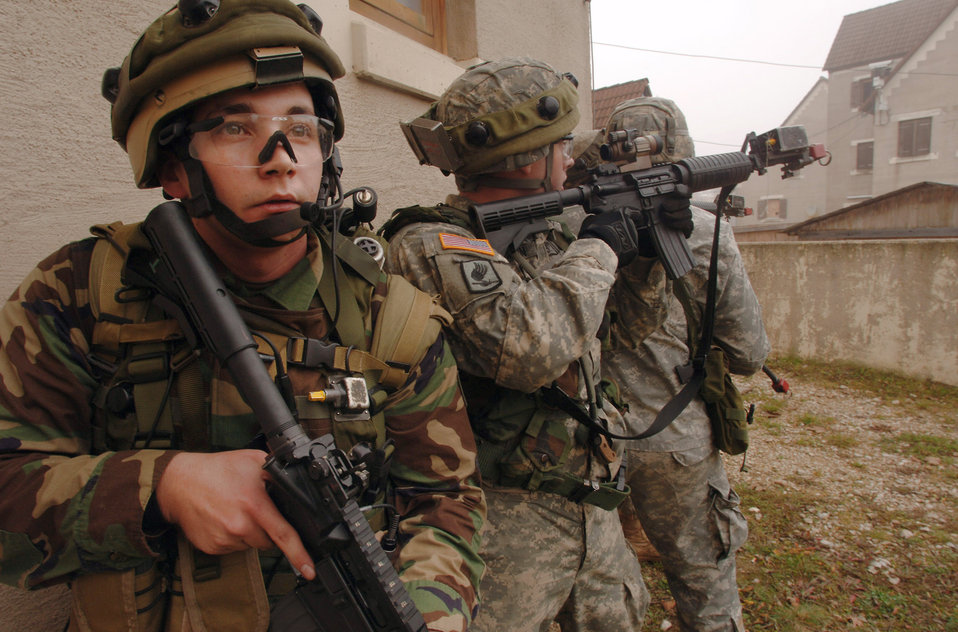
Forward air controllers prepare for war

Staff Sgt. Robert Klayman joins U.S. Army Soldiers infantry in pursuit of a